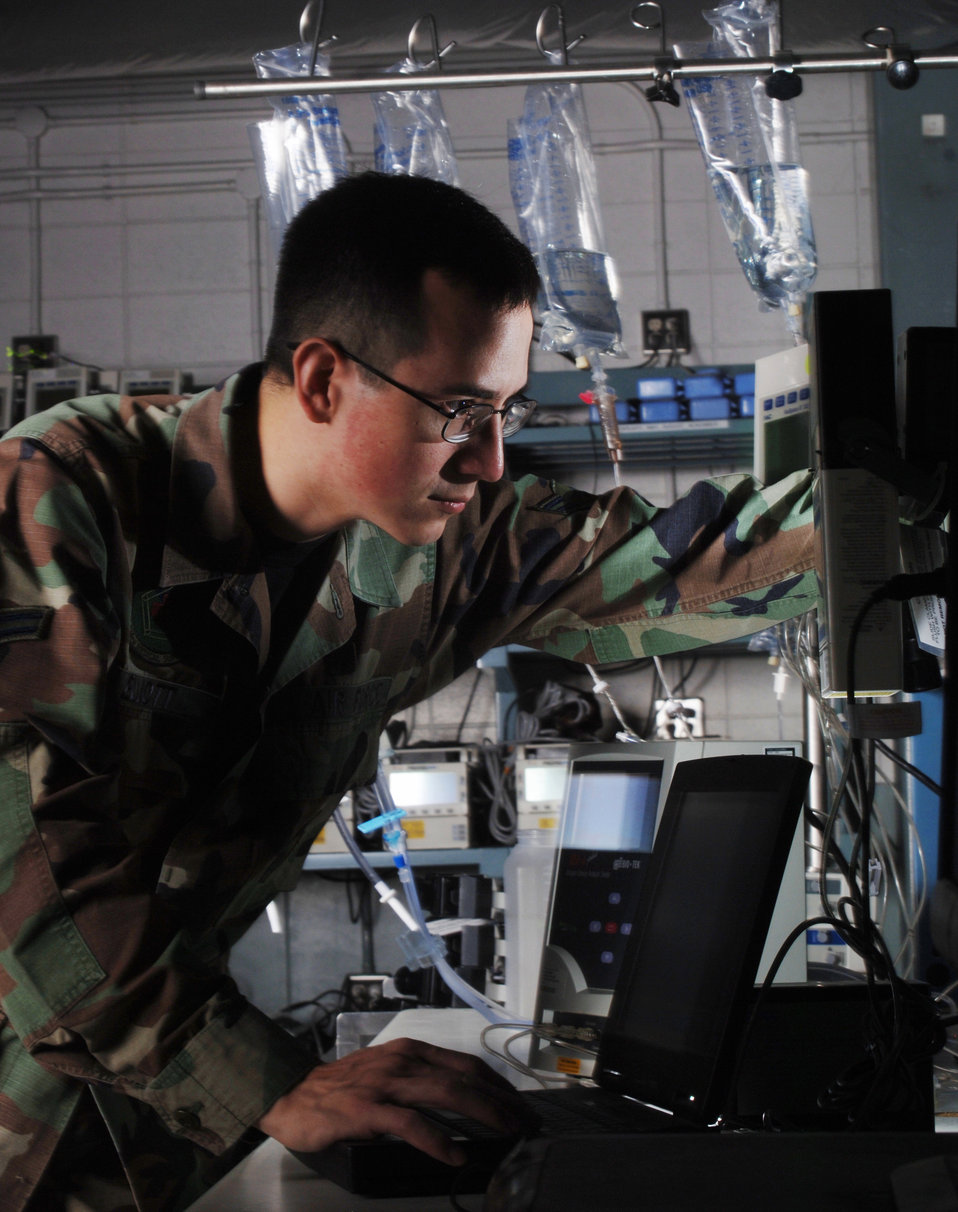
Fluid intake

YOKOTA AIR BASE, Japan -- Airman 1st Class Thomas Elliott conducts calibration and verification test on an infusion pump. The test ensures the equipment properly administers fluid to patients here. He is a biomedical equipment technician with the 374th Medical Support Squadron's medical equipment repair center.